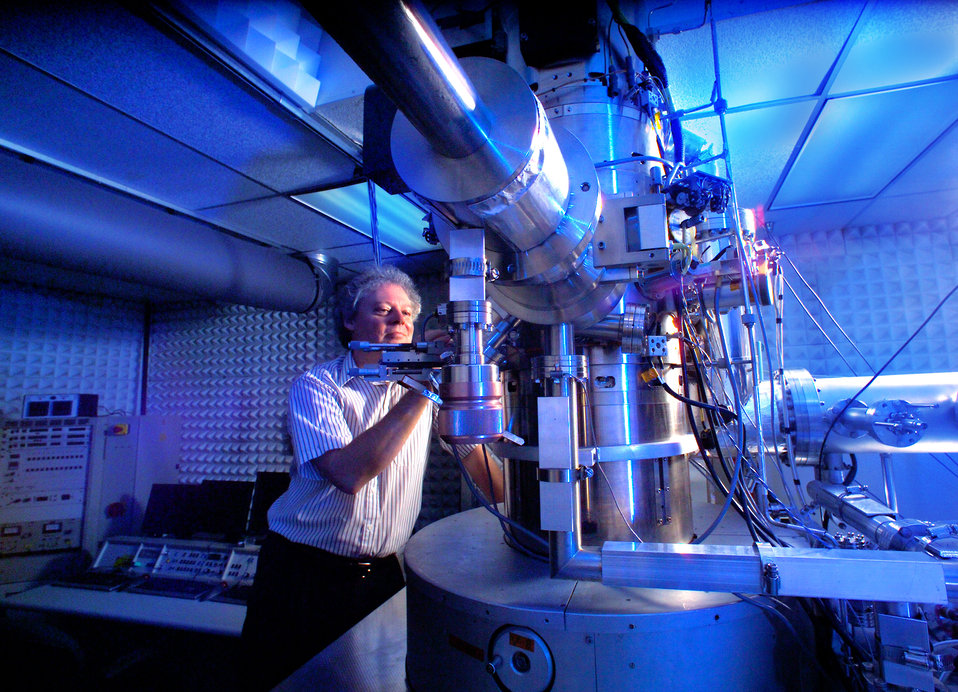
Electron microscope at Oak Ridge National Lab.

04-234-32 DOE photo by Lynn Freeny

Oak Ridge Tennessee 9-14-2004